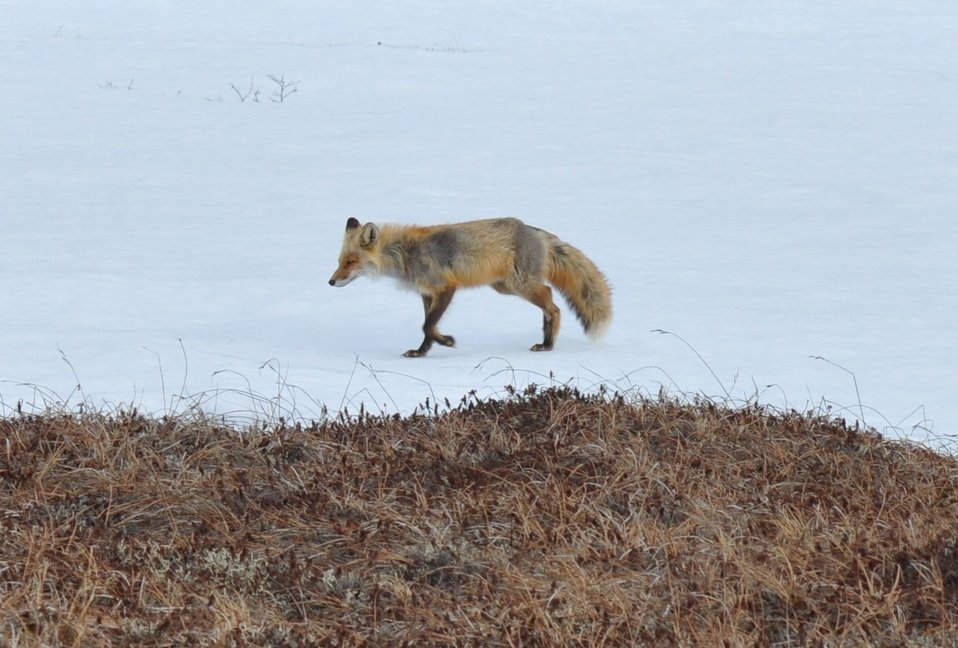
Red fox

Andreafsky Wilderness, Yukon Delta National Wildlife Refuge